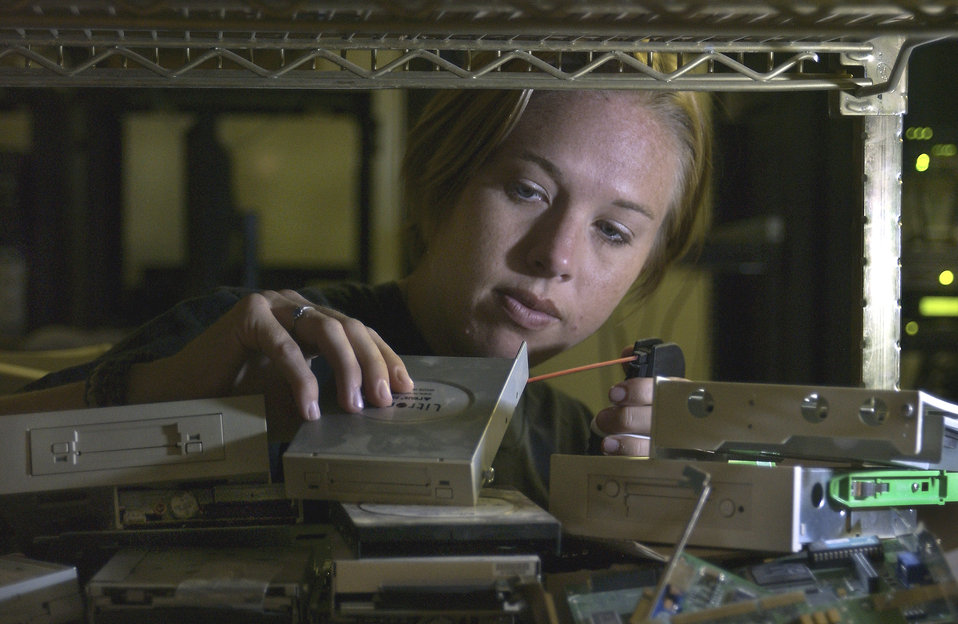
Picking up the pieces

BAGHDAD INTERNATIONAL AIRPORT, Iraq -- Staff Sgt. Karen Riley works to salvage a working hard drive to rebuild a computer by taking apart each computer to test its internal components. When enough working components are found, she pieces together a like-new computer. She is deployed here as part of the 447th Expeditionary Communication Squadron, which is responsible for running the network control center and keeping the Air Force in Baghdad online. Riley is a computer maintenance technician from the 22nd Communications Squadron at McConnell Air Force Base, Kan.